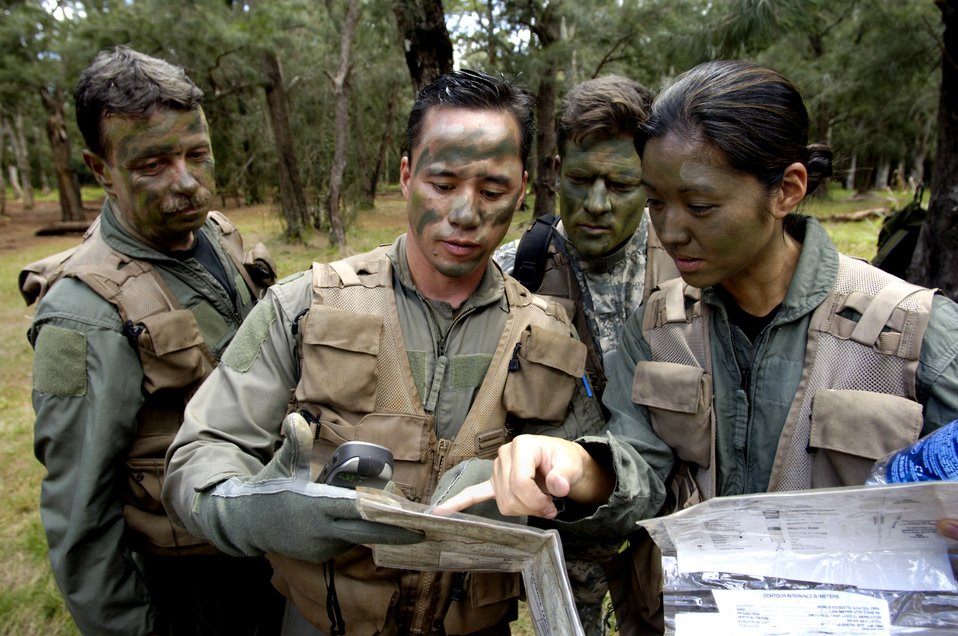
Survival refresher course

Students use a map and GPS (global positioning system) to find their location May 4, 2006 during a ground survival refresher course at Schofield Barracks training area, Hawaii. The course provides hands on realistic training for aircrew members that concentrates on the principles, techniques, and skills necessary to survive in any environment and return home. Staff Sgt. Ferguson is the SERE (survival, evasion resistance and escape) instructor from the 15th Operations Support Squadron. He is responsible for training all active duty and Air National Guard aircrews on Hickam.